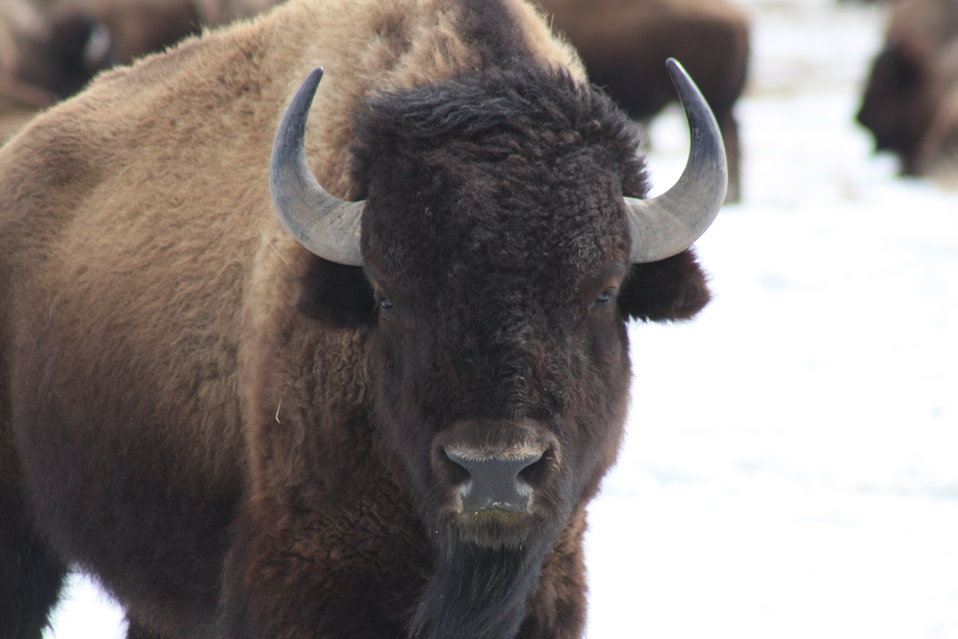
Bison on the National Elk Refuge

Both bull and cow bison have short, curved horns. Their massive heads and shoulders help them move through deep snow.

Credit: USFWS / Ann Hough, National Elk Refuge volunteer